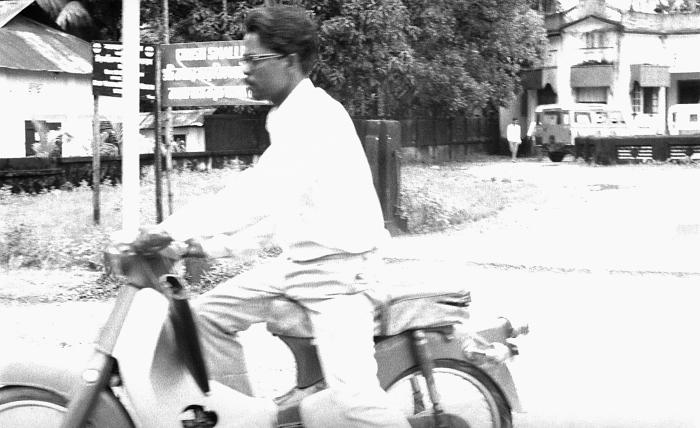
This 1975 photograph depicted a volunteer smallpox eradication team member who'd been making his appointed rounds while riding a motor scooter. Here he was shown riding his scooter to his next destination, where he'd conduct yet another investigation. When a resident did report a smallpox case to the eradication team, the patient's name was entered into the 'Containment Book', which was a ledger, that recorded all of the names of anyone living in, or within one half of a mile from a smallpox case, and subsequently all those listed were vaccinated against smallpox. Those vaccinated were followed until a 'successful' vaccination was observed.